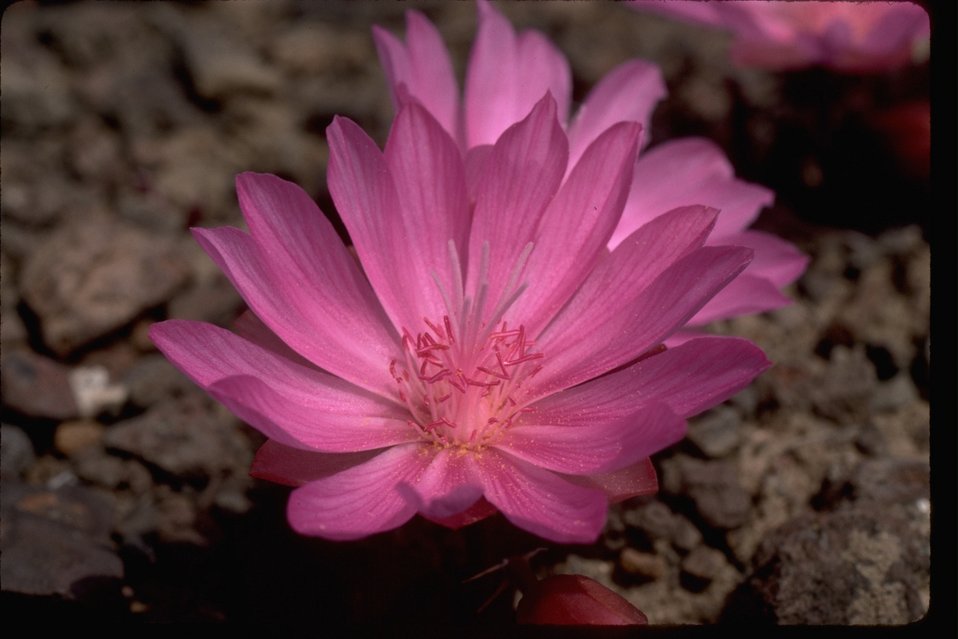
Lewisia Rediviva